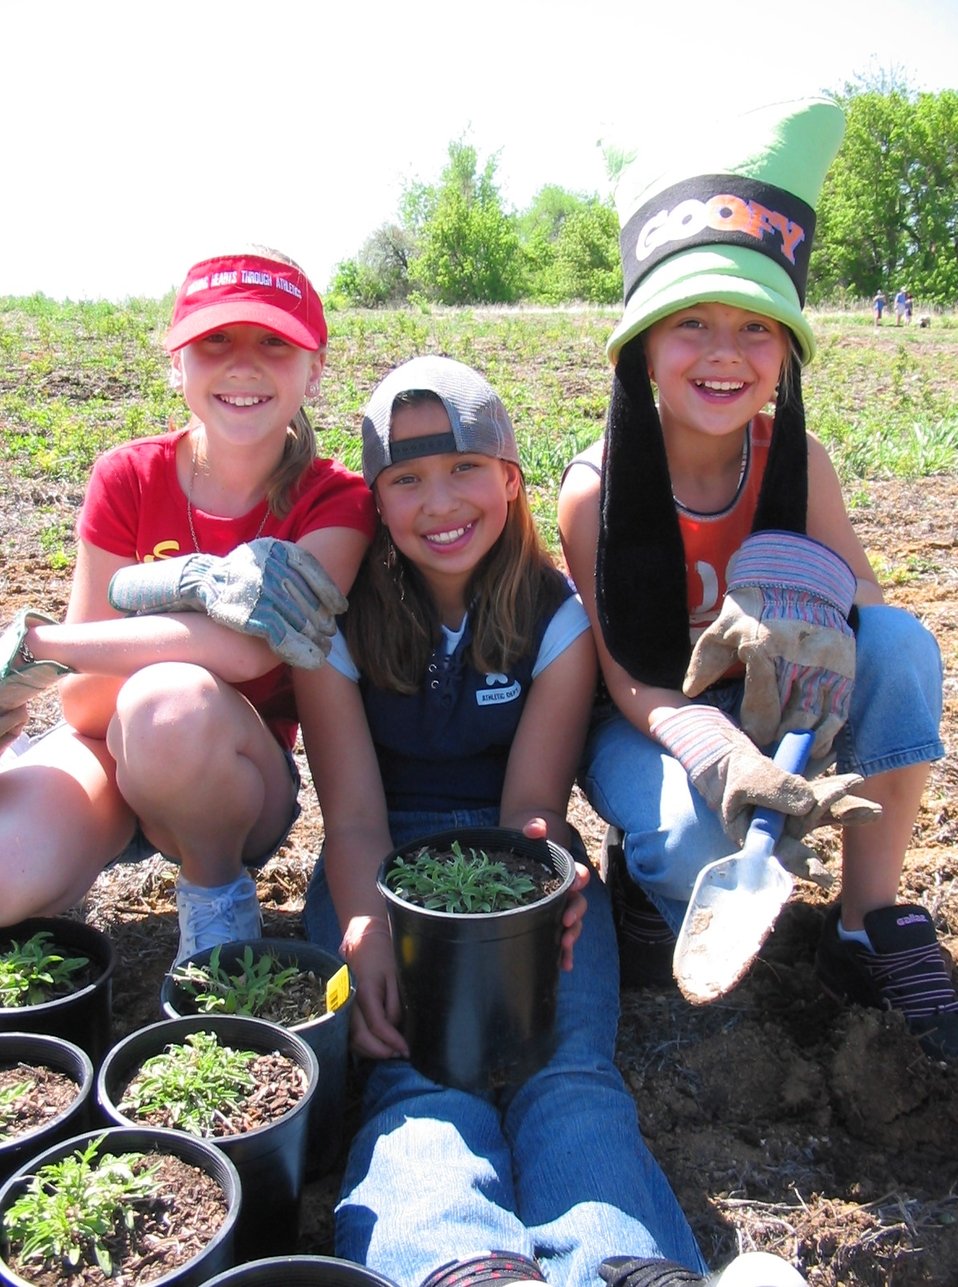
EE Kids Plants